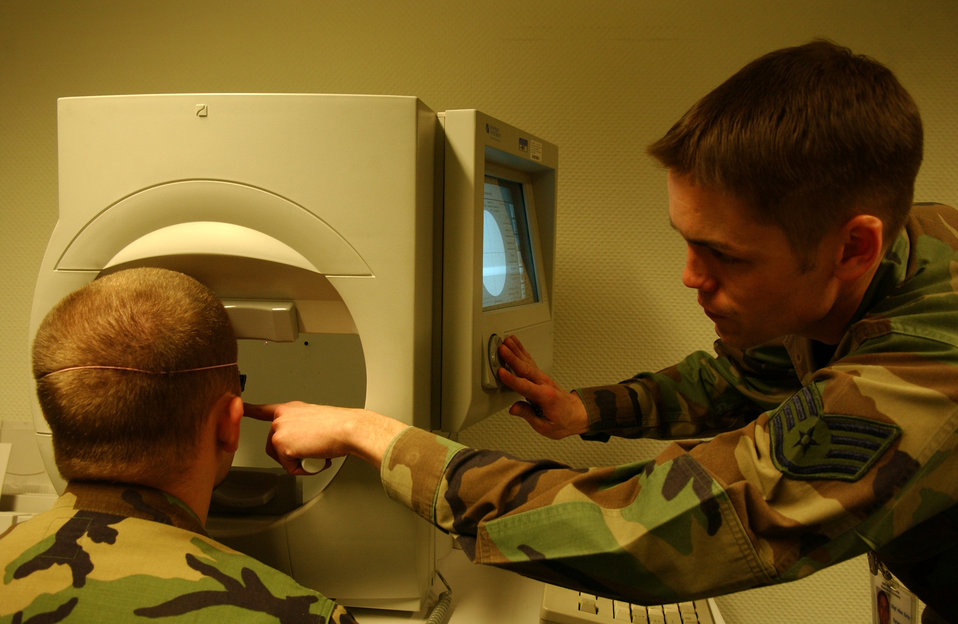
Eye check

Staff Sgt. Allen Kirby performs a routine peripheral vision test on Airman 1st Class Brent Showalter of the 1st Combat Communications Squadron. Sergeant Kirby is an optometry technician with the 435th Aerospace Medicine Squadron at Ramstein Air Base, Germany.